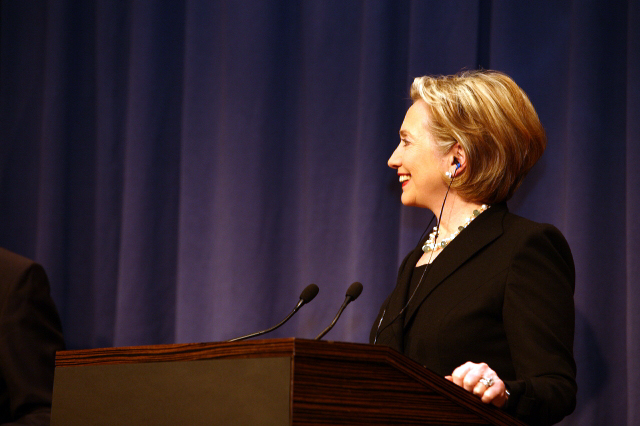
Press Conference With Russian Foreign Minister

Press conference after dinner meeting between U.S. Secretary of State Hillary Rodham Clinton and Russian Foreign Minister Sergey Lavrov in Geneva, Switzerland March 6, 2009.